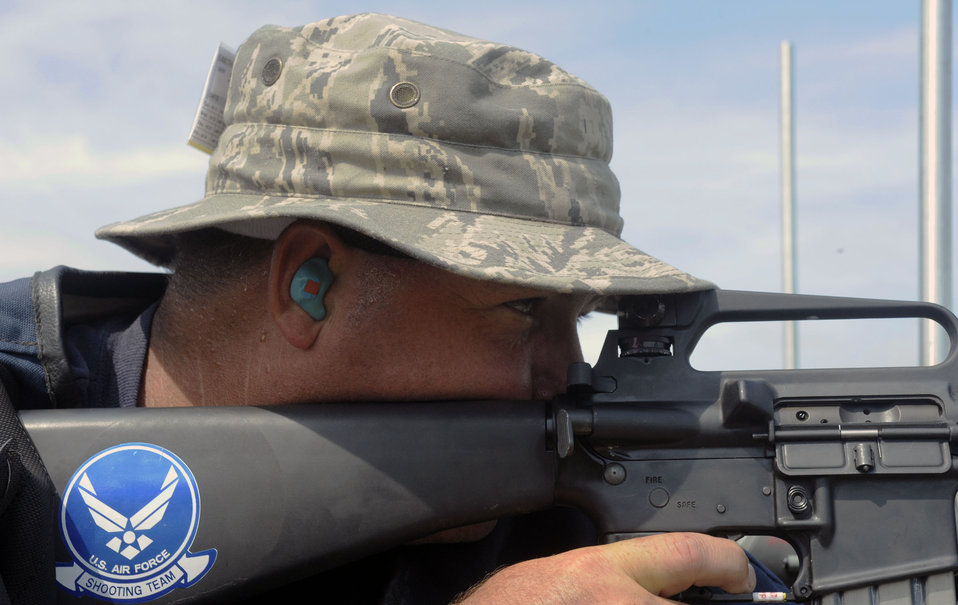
U.S. Air Force Shooting Team

Tech. Sgt. Darryl Smith, a member of the U.S. Air Force Shooting Team, prepares to fire at his target from the seated position during the 200-meter portion of the high power rifle competition of the 2009 National Rifle and Pistol Championships at Camp Perry, Ohio. Sergeant Smith is an Aerospace Ground Equipment specialist with the 355th Equipment Maintenance Squadron at Davis-Monthan Air Force Base, Ariz.